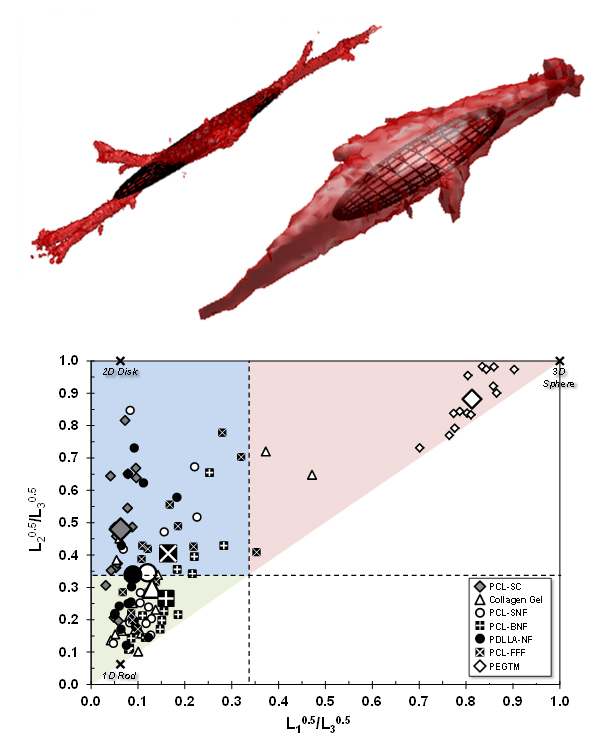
Cell Scaffolding

(Top) The same basic cell type grown on two different bio scaffolds (collagen gel and a grid-like scaffold made of a biocompatible polymer) adopts significantly different shapes. The superimposed ellipsoids are calculated from the dimensions of each cell. (Bottom) Plotting the characteristic ellipsoids for each cell by how round they are in the two major cross sections reveals that cells tend to different shapes on different scaffolds--spheres at one extreme, long narrow rods at another.